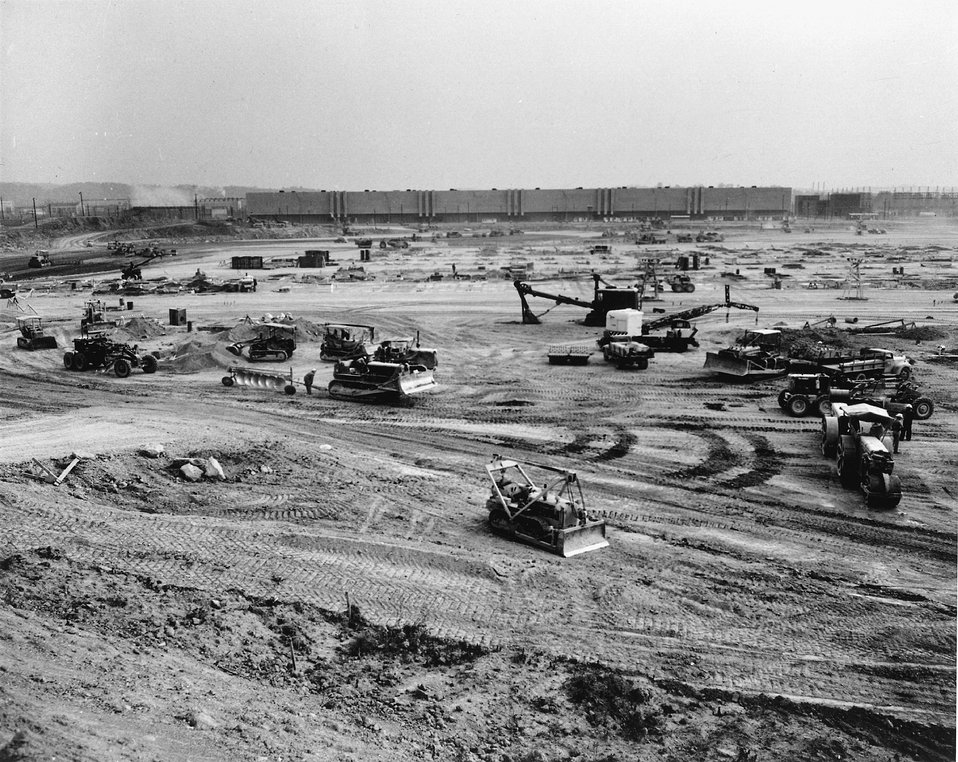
Construction, Oak Ridge, Gaseous Diffusion Plant in the background. c. undated